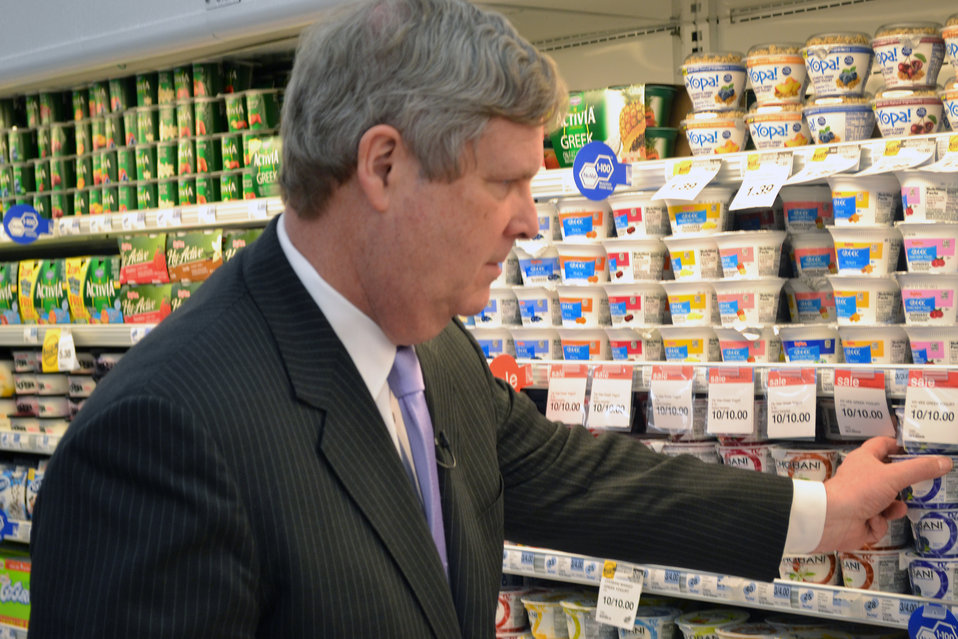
Agriculture Secretary Tom Vilsack visited a Hy-Vee grocery store in Sioux Falls, South Dakota to discuss USDA efforts to promote fruit and vegetable consumption, improve childhood nutrition and prevent obesity to raise a healthier generation of Americans. He announced the results of a pilot program aimed at increasing fruit and vegetable consumption in America’s poorest schools.